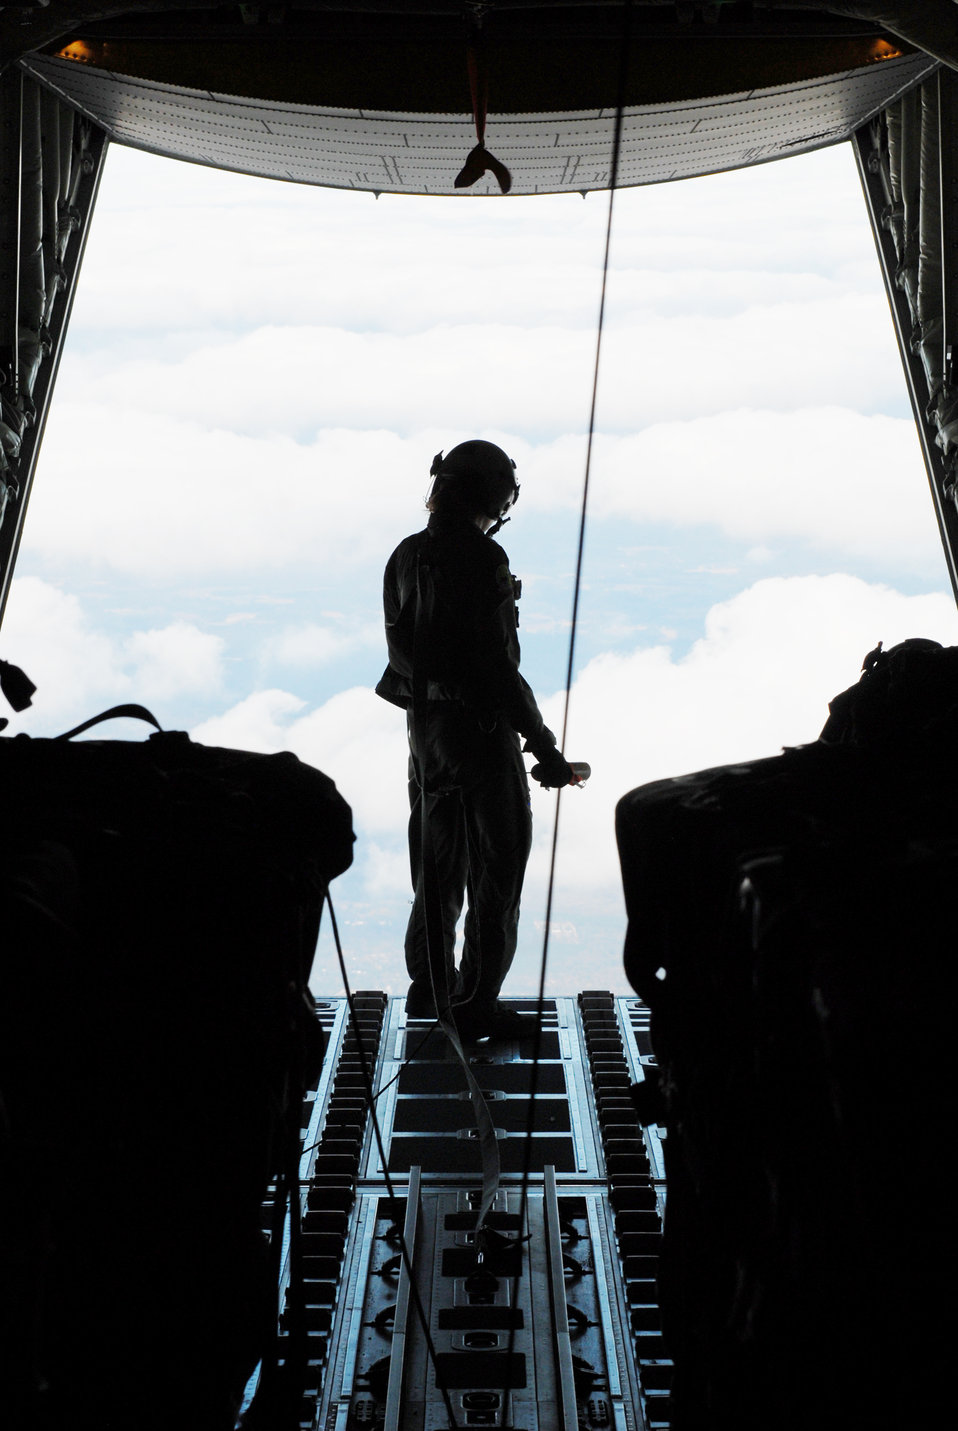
Testing the weather

Senior Airman Erica Peschel prepares to drop a dropsonde, a canister that measures weather conditions, as part of a joint exercise Oct. 29, 2009, at Pope Air Force Base, N.C. Airman Peschel is a 41st Airlift Squadron loadmaster at Little Rock AFB, Ark.